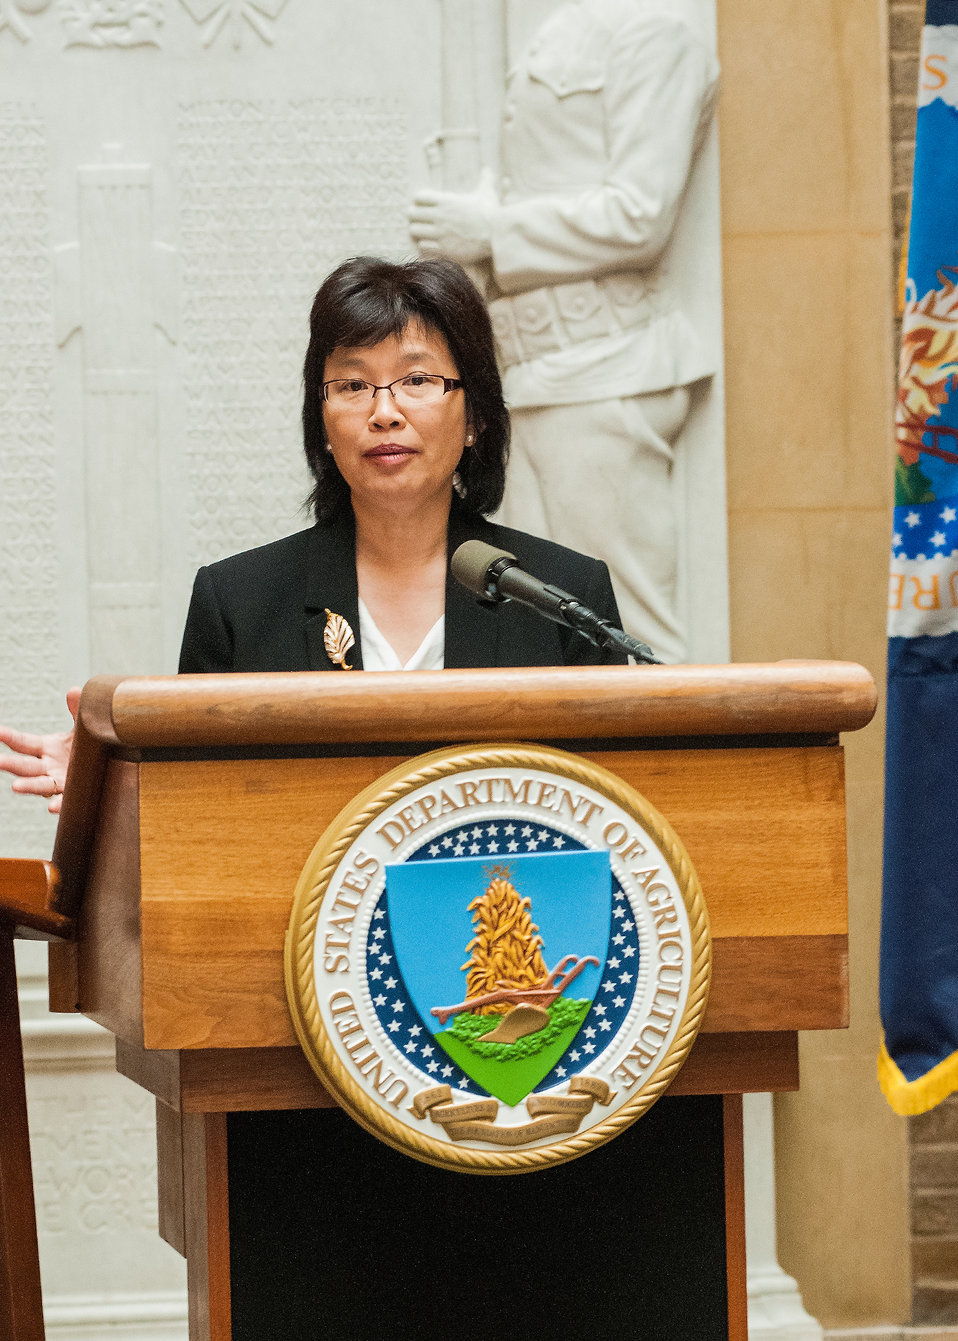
Department of Energy (DOE) Biological and Environmental Research Associate Director Dr. Sharlene Weatherwax explains the Bioenergy research agenda of the Office of Biology and Environmental Research and Bioenergy Research Centers of the DOE at the U.S.-Israel Bio-Challenge Symposium at the U.S. Department of Agriculture (USDA) in Washington, D.C. on Thursday, Apr. 18, 2013.